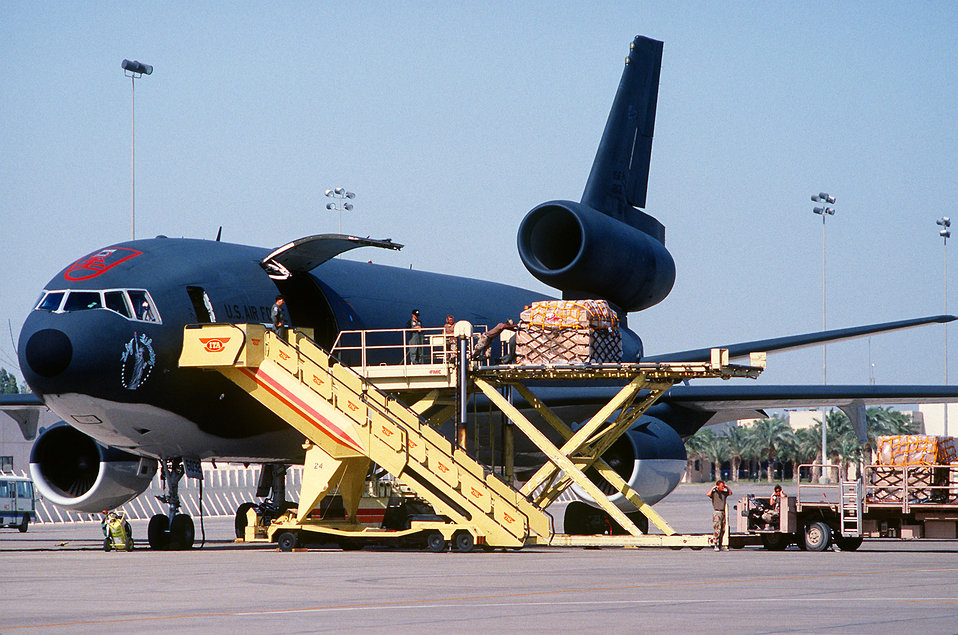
Supplies are unloaded from a KC-10A

1990's -- Supplies are unloaded from a KC-10A Extender aircraft during Operation Desert Shield.